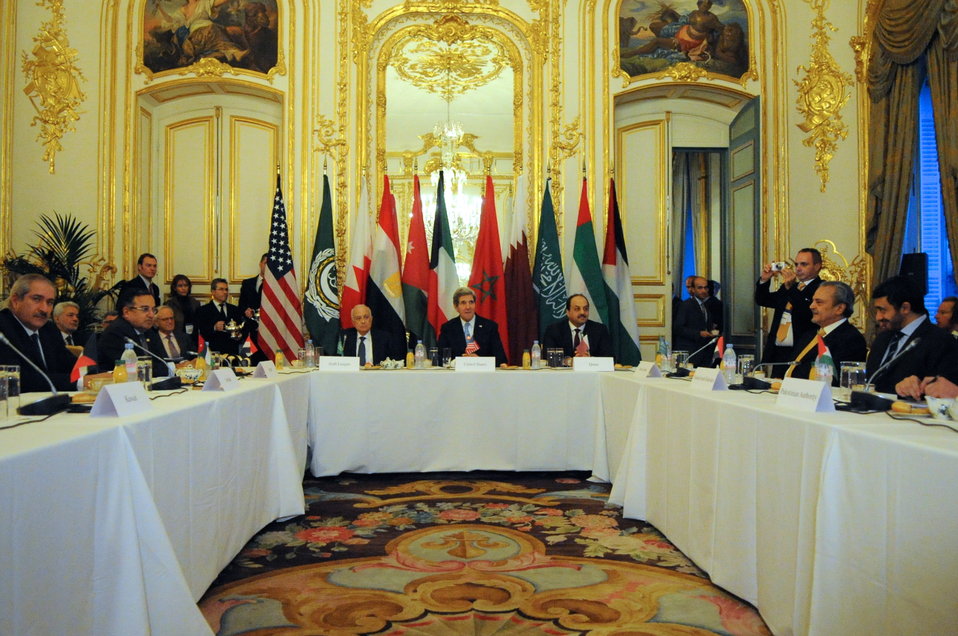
Arab Peace Initiative Members Meet With Secretary Kerry in France

U.S. Secretary of State John Kerry, flanked by Arab League Secretary-General Nabil Alaraby and Foreign Minister Abdullah bin Zayed al Nayan of Qatar, looks out over a meeting of the Arab Peace Initiative in Paris, France, on January 12, 2014.